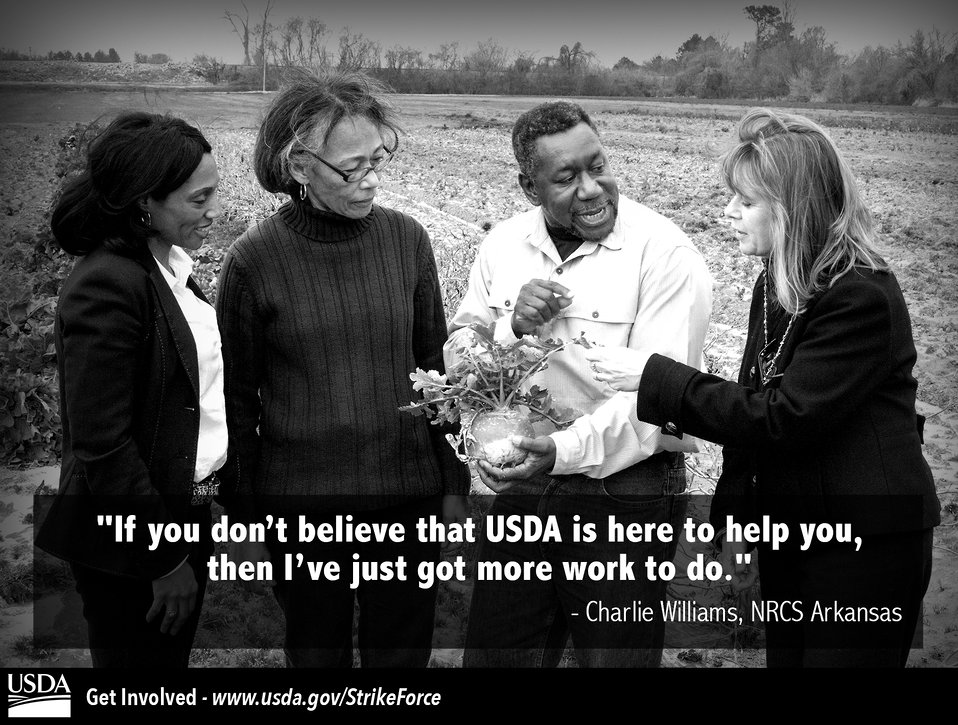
'If you don't believe that USDA is here to help you, then I've just got more work to do.' - Charlie Williams, NRCS Arkansas.